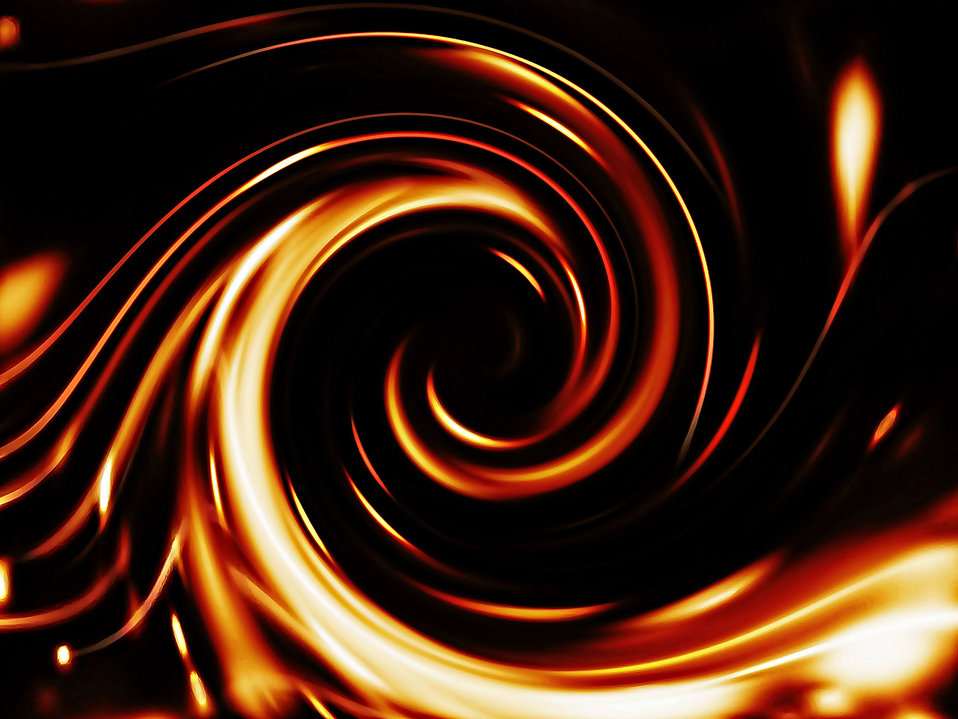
Fire spiral out of focus

Background.